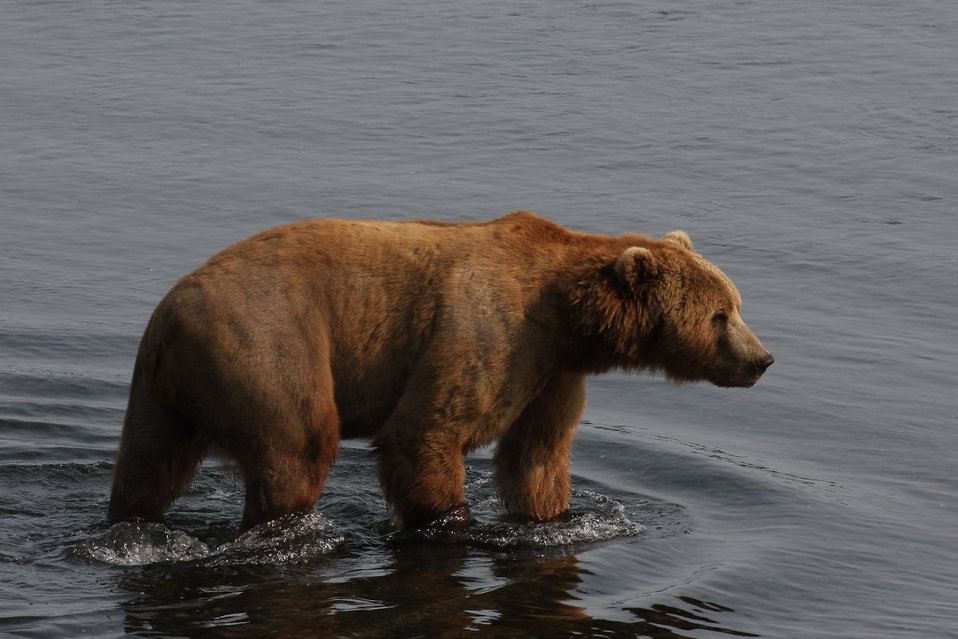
Boar at Dog Salmon River

Lisa Hupp/USFWS